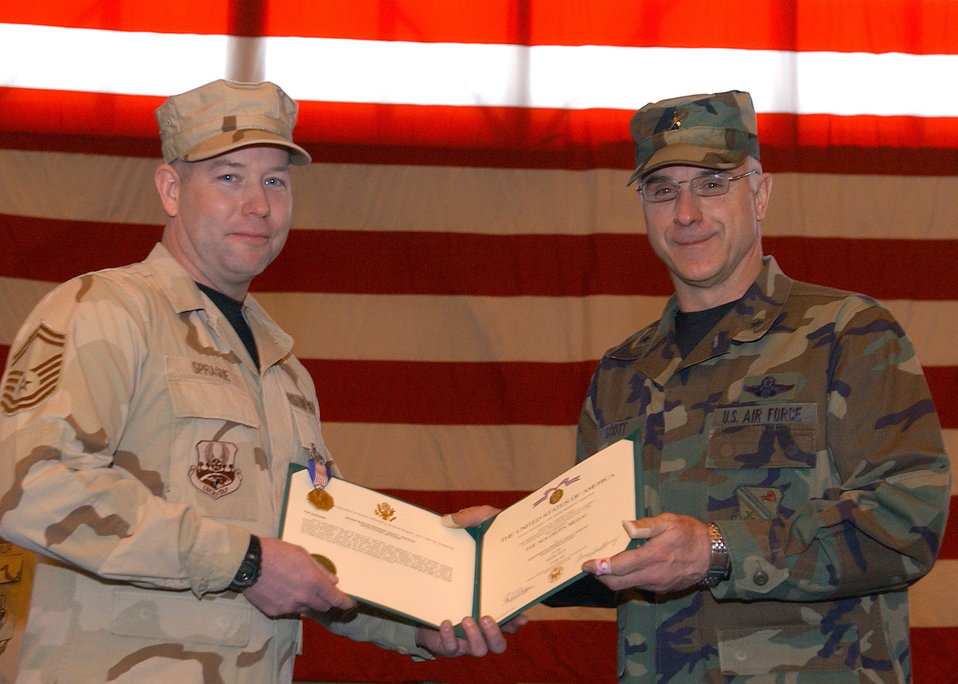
Welcome Home Ceremony

Senior Master Sgt. Dean Sprague, 354th Logistics Readiness Squadron, poses with 354th Fighter Wing Commander Brig. Gen. Dave Scott during a Welcome Home Ceremony for returning deployed airmen at Eielson Air Force Base, Alaska March 9. Sergeant Sprague recieved the Soldier's Medal for his heroic efforts, which saved the lives of five Afghan civilians during his deployment. .